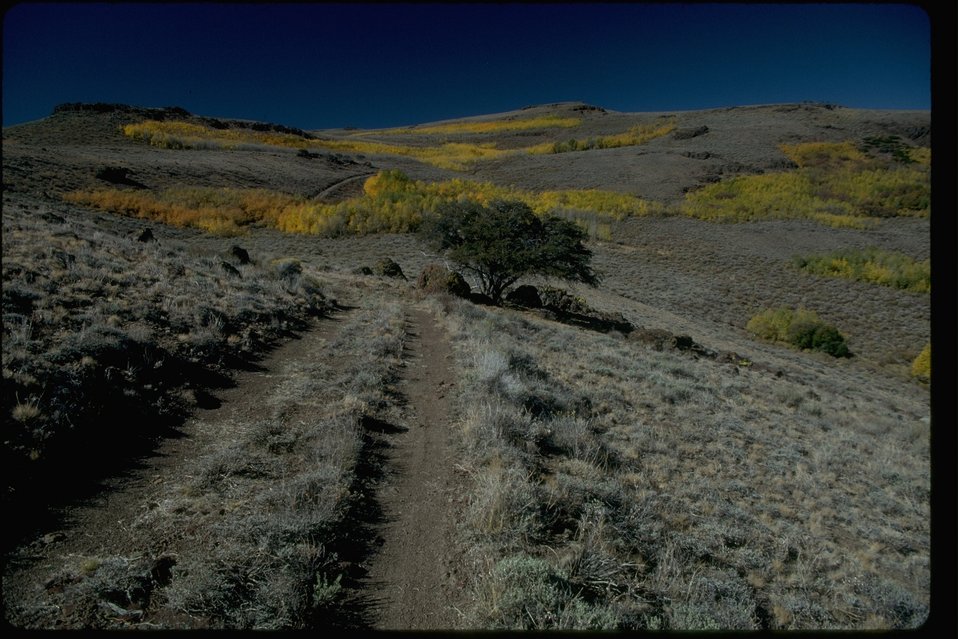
Willow Creek Wilderness Study Area two track road, maybe a trail. OR 3-152.